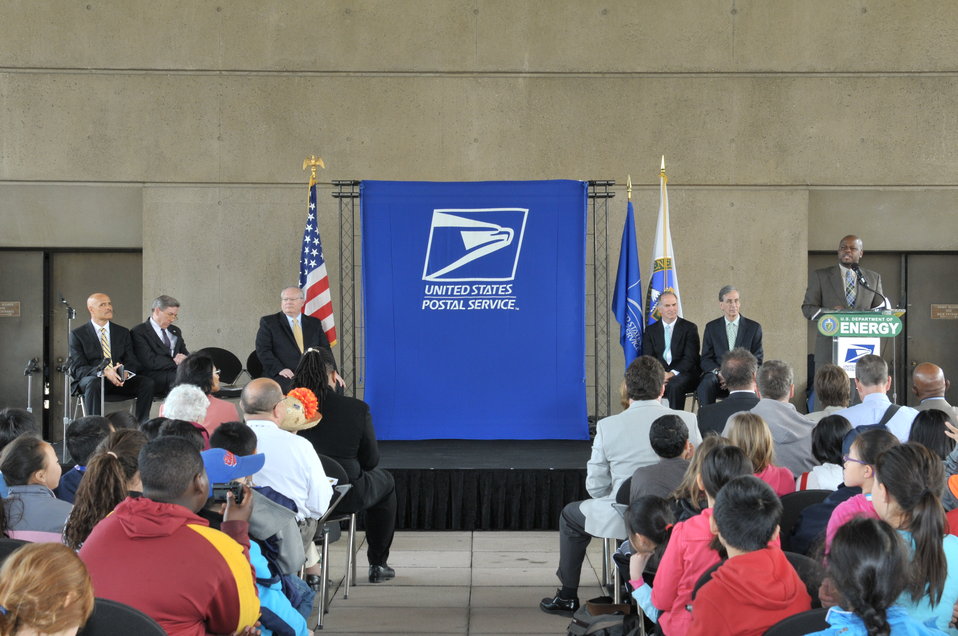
U.S Postal Services introduces a new Global: Sea Surface temperatures forever stamp at the Earth Day program at Department of Energy on April 22, 2014. ( DOE Deputy D.Poneman,T.Day, C.Williams, C.Anderson II, J.Colin Ph.D, Dr. K. Sullivan, K.Tobin Ph.D, W. Gicher Jr)